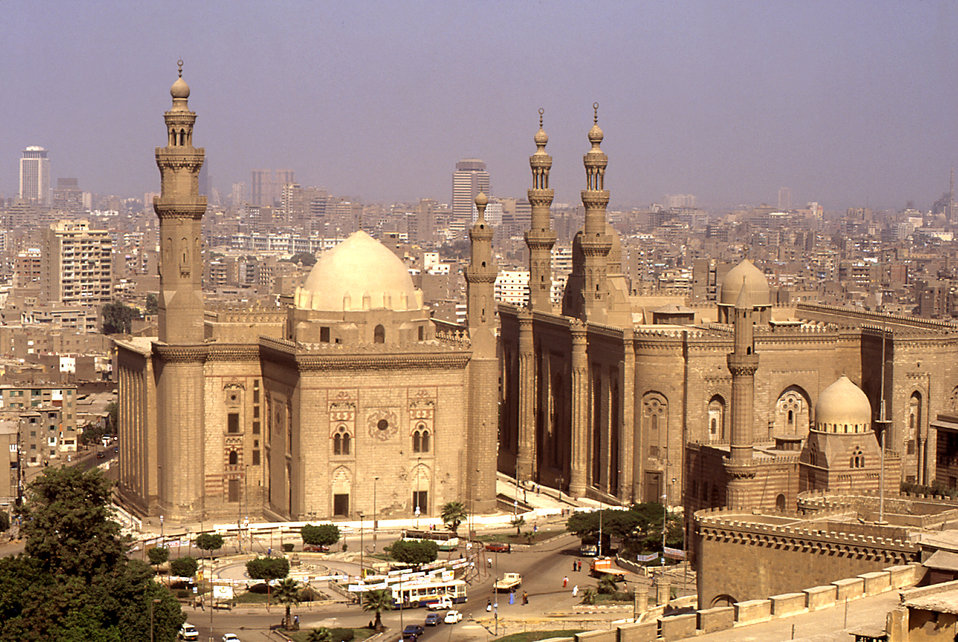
This is a view of the Sultan Hassan Mosque and madrasa (school) in Cairo, Egypt as seen from the famed Alabaster Mosque. Construction of the Sultan Hassan Mosque was begun in 1356 and completed six years later. It was a very large mosque for its time, spanning 150 meters and having approximately 7,900 square meters of indoor space. It is considered by many to be the most outstanding Islamic monument in Egypt.Designed by a Greek architect, the Alabaster Mosque (officially the Mohammed Ali Mosque) was finished in 1857. It is representative of the 'Ottoman Style', and is the resting place of Mohammed Ali Pasha, ruler of Egypt, and founder of the country's last dynasty. Cairo, Egypt is a popular tourist destination for Westerners, as well as the entry point to the Great Pyramids of Giza. Tourists would do well, however, to be mindful of the potential health hazards associated with travel to any destination, foreign or domestic.